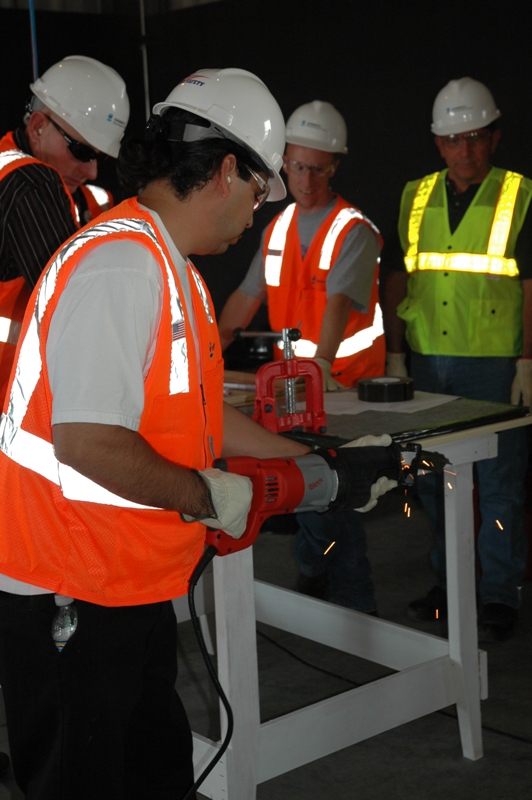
Stimulus jobs build skill sets, confidence

Workers training for decommissioning and demolition operations at the Hanford Site.